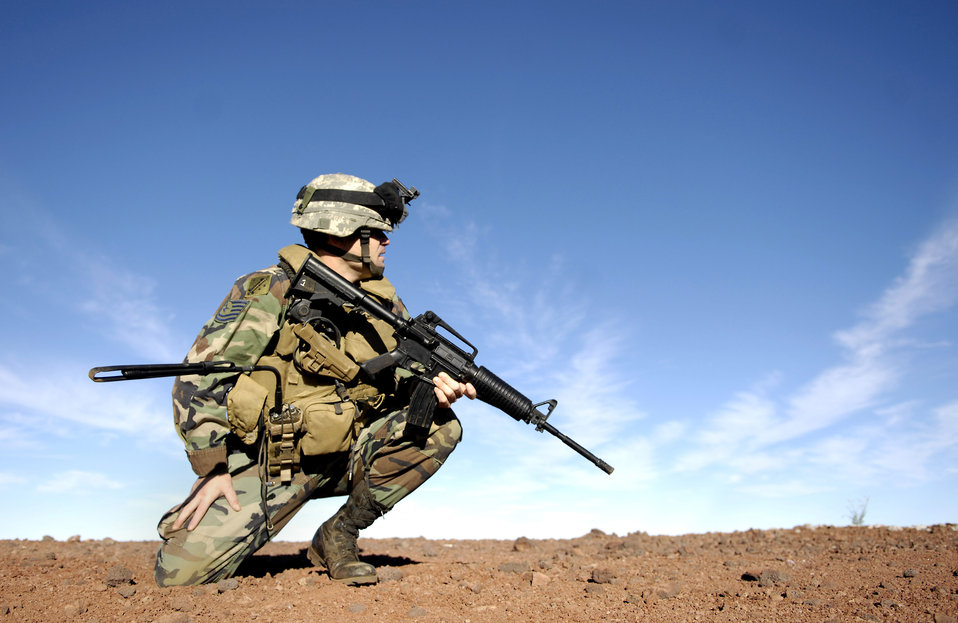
TACPs participate in excercise

Tech. Sgt. Rick Setlock gives instructions on setting up and securing an evacuation landing zone during training Oct. 23 at the Pohakuloa Training Area on the big island of Hawaii. Sergeant Setlock is a tactical air control party member from the 25th Air Support Operations Squadron, Wheeler Army Airfield, Hawaii. The TACPs are training as part of the Koa Lighting exercise where bombers fly from Guam and practice their targeting.